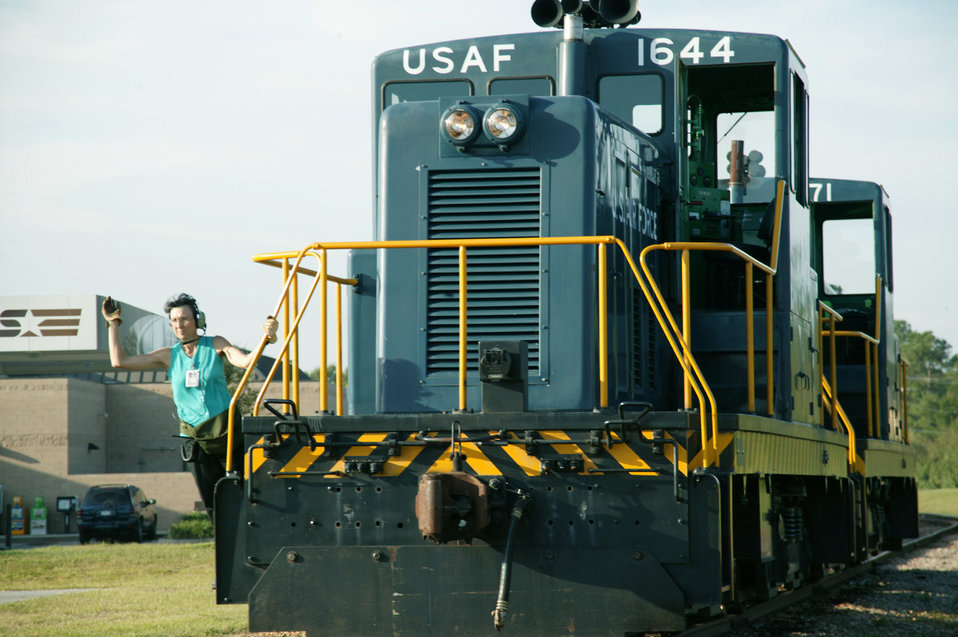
Shaw trains still chugging

SHAW AIR FORCE BASE, S.C. -- Train conductor Michele Hill moves a locomotive toward empty rail cars before pulling them off base. Shaw has two 80-ton locomotives that deliver jet fuel to the fuels management flight.